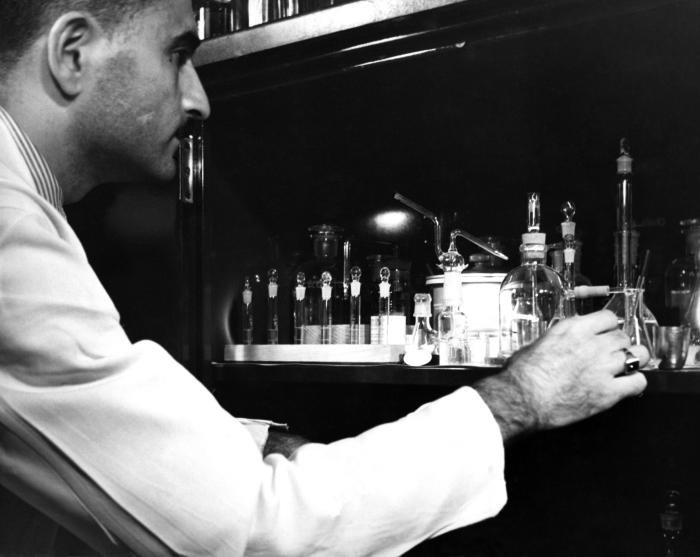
This November, 1943 photograph was provided by the Center for Disease Control's (CDC), National Institute for Occupational Safety and Health (NIOSH). The image depicted a doctor who was analyzing blood samples for the presence of xyledine, also known as xylidine (dimethylaniline), which is a chemical used in the creation of dyes, acting as a dyestuff intermediate. The chemical is also used in the blending of gasoline mixtures. Exposure to xylidine can occur via inhalation, ingestion, eye contamination, or by absorption through the skin. Based on effects seen in animals, xylidine is a potential human carcinogen. This man was not wearing a protective filtered breathing mask, goggles, or gloves while carrying out these experiments.